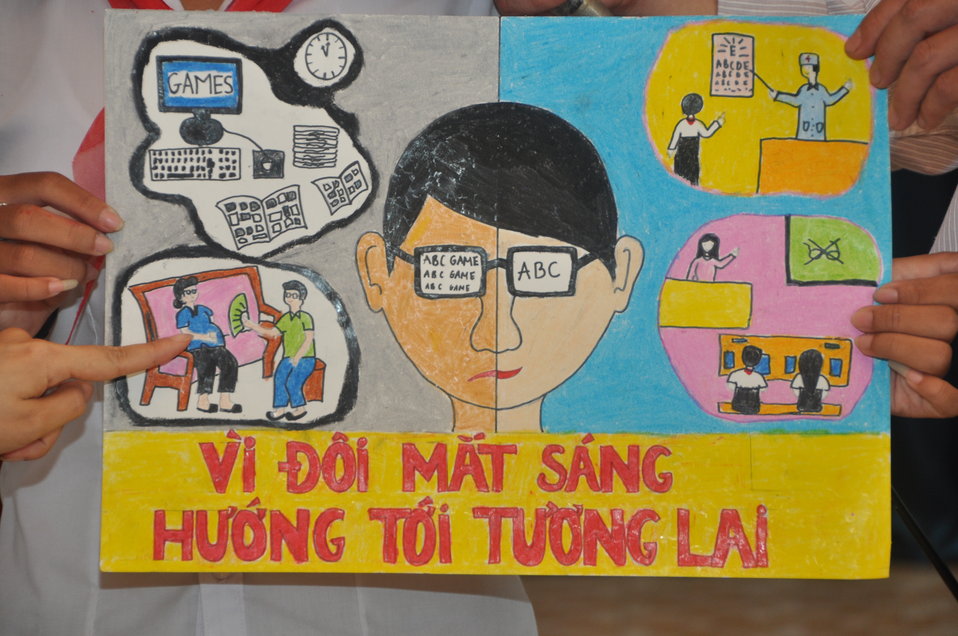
Students in Kon Tum create artwork about the importance of eye care